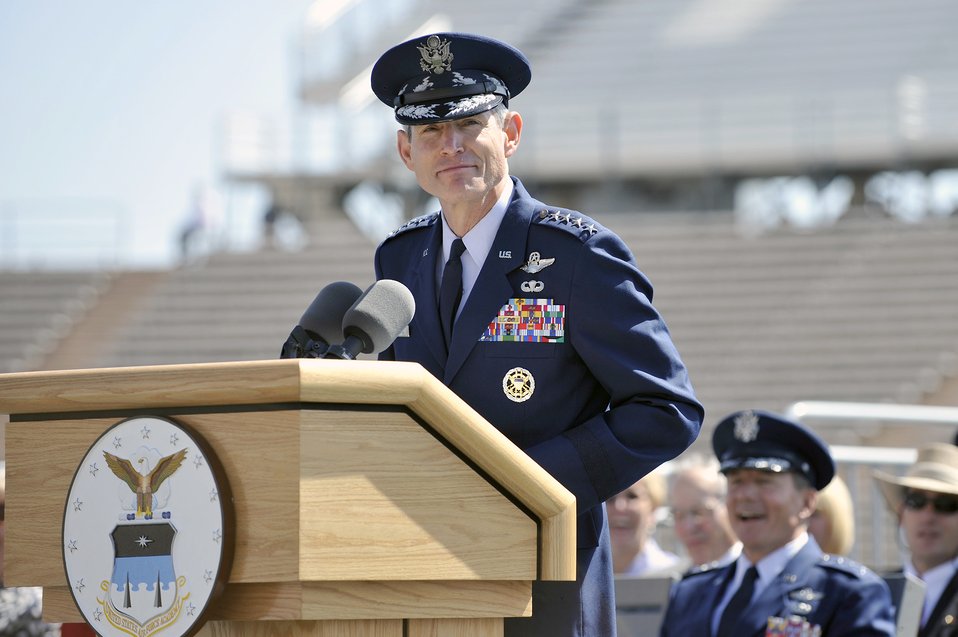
Joint Chiefs chairman delivers Academy commencement

Gen. Norton Schwartz introduces the commencement speaker Navy Adm. Mike Mullen during the class of 2010 graduation ceremonies May 26, 2010, at the U.S. Air Force Academy, Colo. Admiral Mullen is the chariman of the Joint Chiefs of Staff. General Schwartz is the Air Force chief of staff.